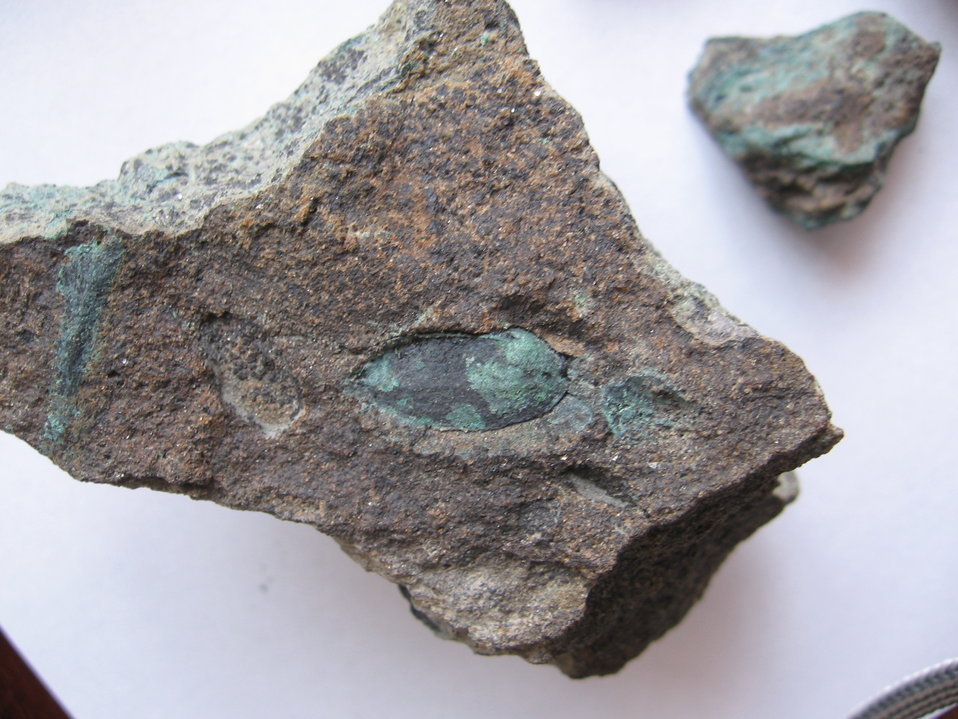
Українська: мідна руда: Фото